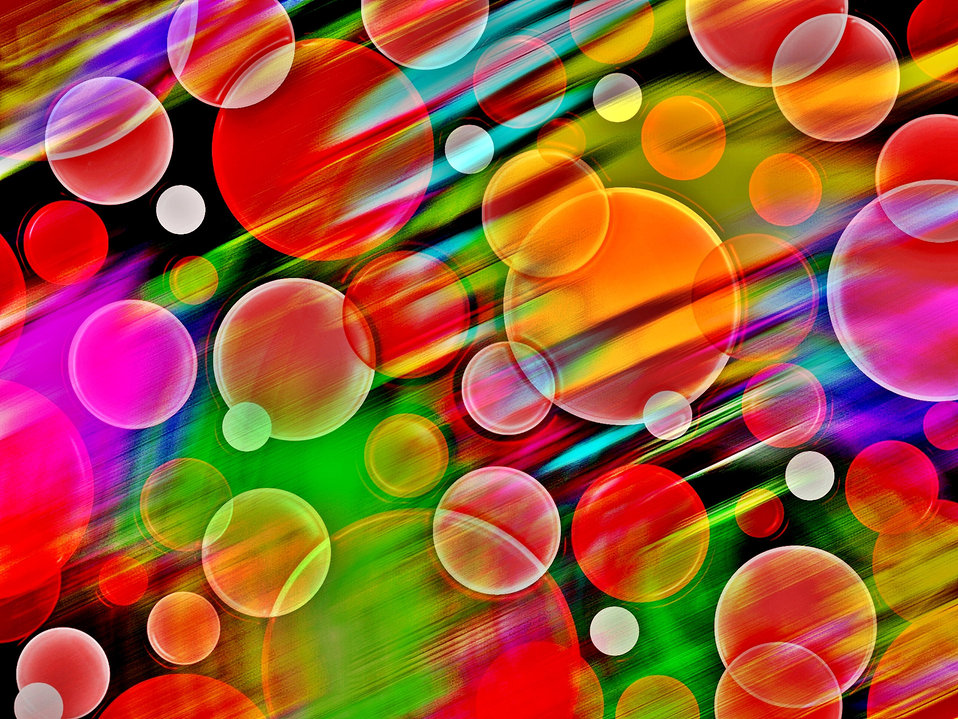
Background 362

Background.